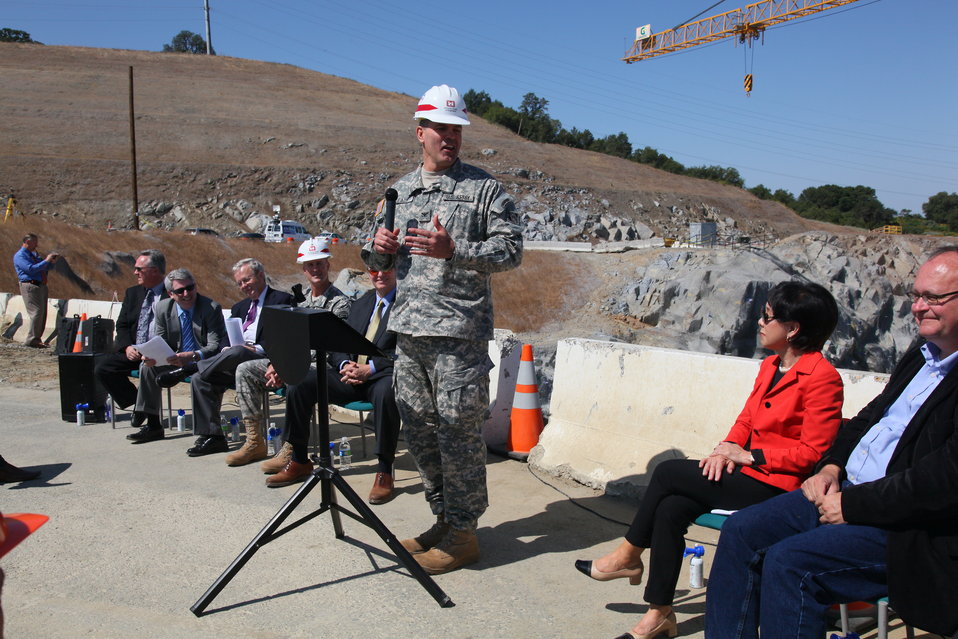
First concrete ceremony for Folsom Dam spillway

U.S. Army Corps of Engineers Sacramento District commander, Col. Bill Leady (standing), addresses the crowd at a ceremony commemorating the first concrete placement for the auxiliary spillway control structure at Folsom Dam in Folsom, Calif., May 24, 2012. The Corps, together with the U.S. Bureau of Reclamation and state and local partners, is building the spillway to reduce flood risk throughout the Sacramento region.